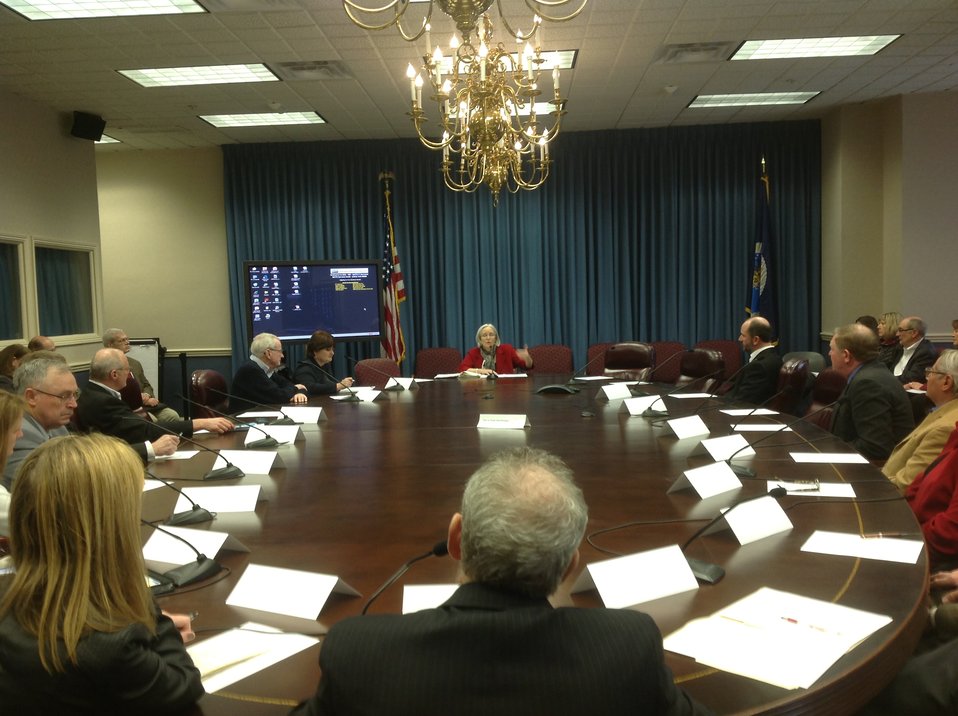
Image 1

U. S. Department of Agriculture (USDA) Deputy Under Secretary Natural Resources and Environment (NRE) Ann Mills (center) addresses Leopold Conservation Award Winners at the U.S. Department of Agriculture (USDA).